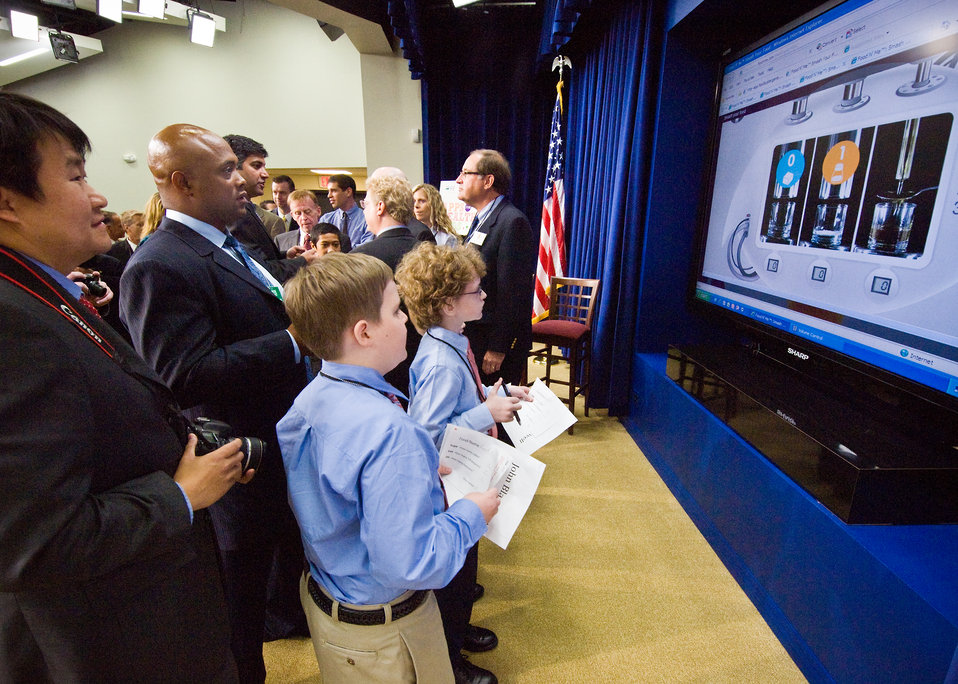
From left: Peter Rhee, United States Department of Agriculture, Office of Communications grabs a few photographs for the USDA Blog as former Washington Redskins Running Back Brian Mitchell competes against brothers Frederick, Antonio and Joseph Blackwell (not shown) in the the computer game, “Smash Your Food.” “Smash Your Food” is the Third Place winning app in the The Apps for Healthy Kids games competition. Smash Your Food,' is a guessing game bursting with realism and surprise. It lets children see and hear foods like a milkshake, or a burger, explode - while learning how much sugar, salt and oil their favorite foods are hiding. Frederick won the game and a replica Pro Bowl helmet signed by Joe Thomas of the Cleveland Browns and Chris Hope of the Tennessee Titans. The Apps for Healthy Kids competition is part of First Lady Michelle Obama’s Let’s Move campaign to end childhood obesity within a generation. The competition challenges software developers, game designers, students and other innovators to develop fun and engaging software tools and games to urge children, especially “tweens” (children ages 9-12) – directly or through their parents – to eat better and be more physically active. The applications are software tools or games for the web, personal computer, mobile handheld device, console or any software platform available to the public. The winners were honored at the White House, Wednesday, September 29. USDA Photo 10di15067-24 by Bob Nichols.